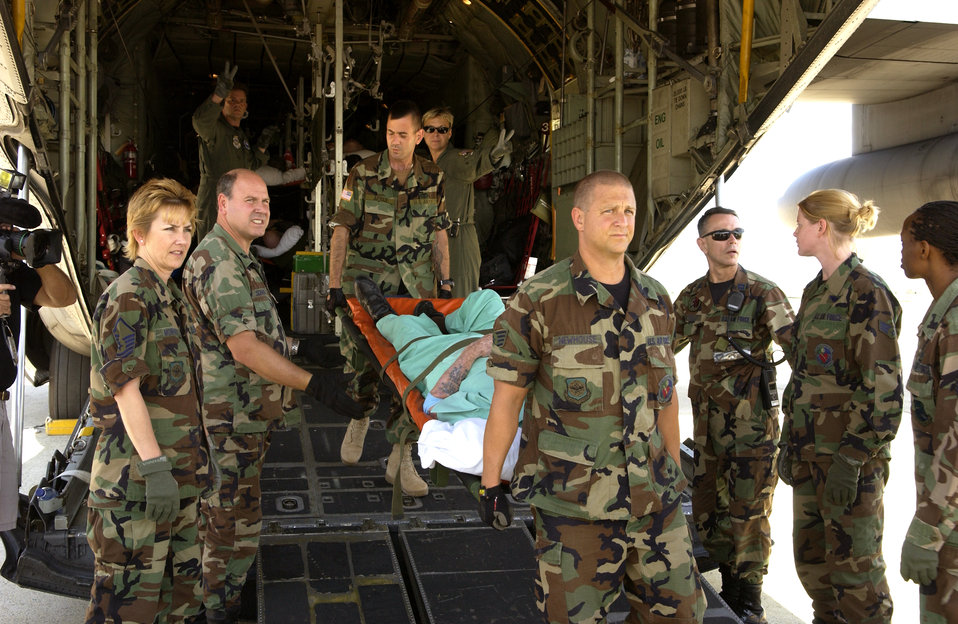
Evacuation

ANDREWS AIR FORCE BASE, Md. - A passenger is carried from a C-130 Hercules by Airmen who transported veterans from the Armed Forces Home in Gulfport, Miss. after Hurricane Katrina decimated the area. The veterans were flown by a C-130 Hercules from Maxwell to here where they were taken to the Armed Forces Home in Washington, D.C.